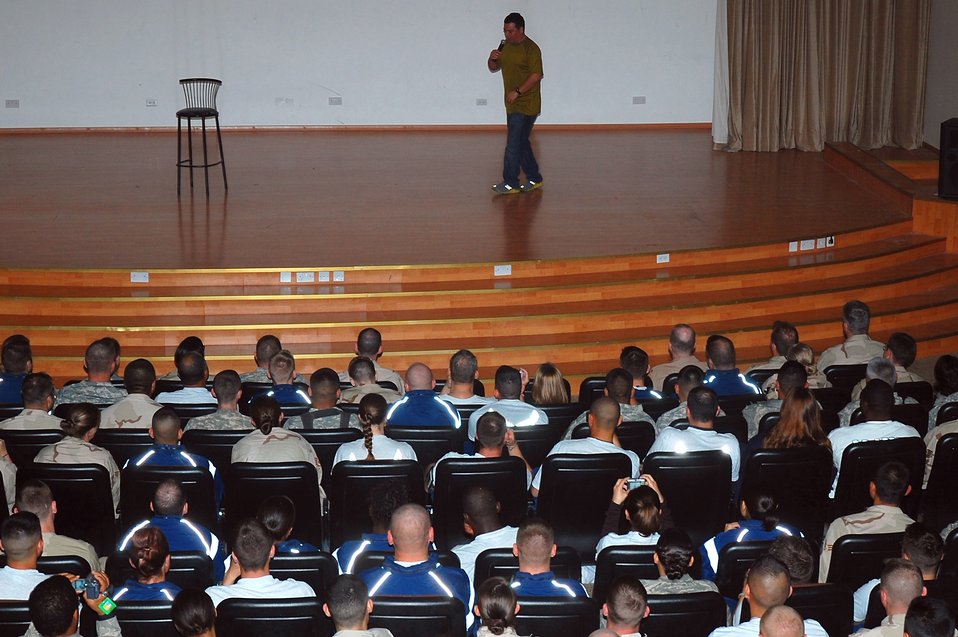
'Mind of Mencia' entertains troops in Middle East

Comedian Carlos Mencia entertains members of the 386th Air Expeditionary Wing Nov. 28 in Southwest Asia. Mr. Mencia and his crew traveled throughout the Middle East providing entertainment for deployed servicemembers.